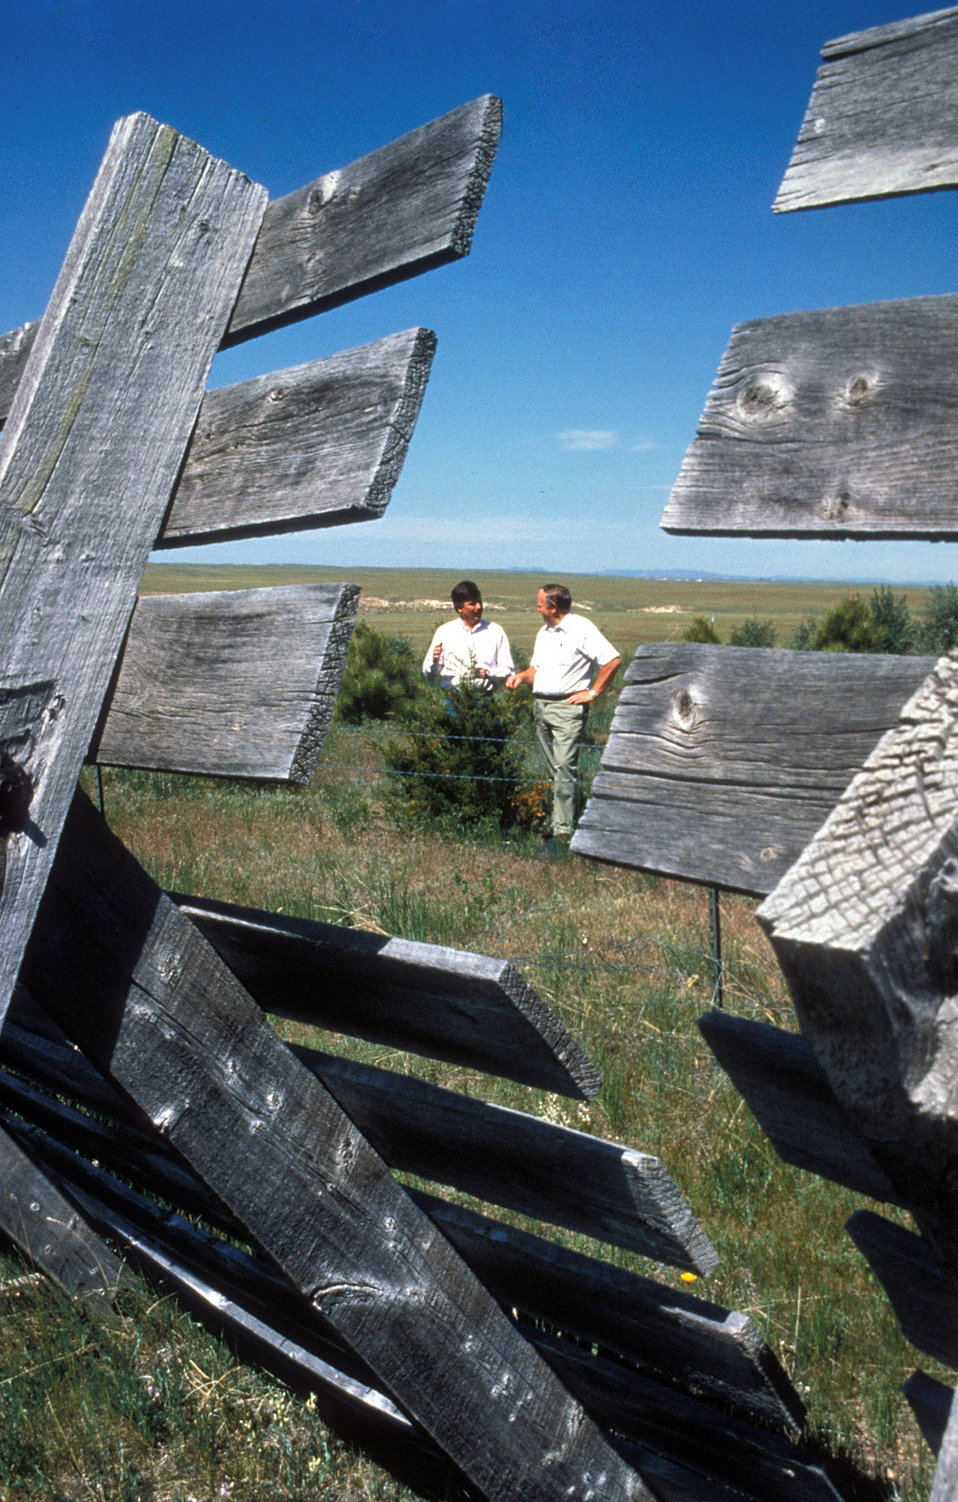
Southeastern Wyoming Laramie County Conservation District employee Jim Arnold discusses using trees instead of wooden fences to trap drifting snow with U.S. Department of Agriculture (USDA) Agricultural Research Service (ARS) soil scientist Gerald Schuman.